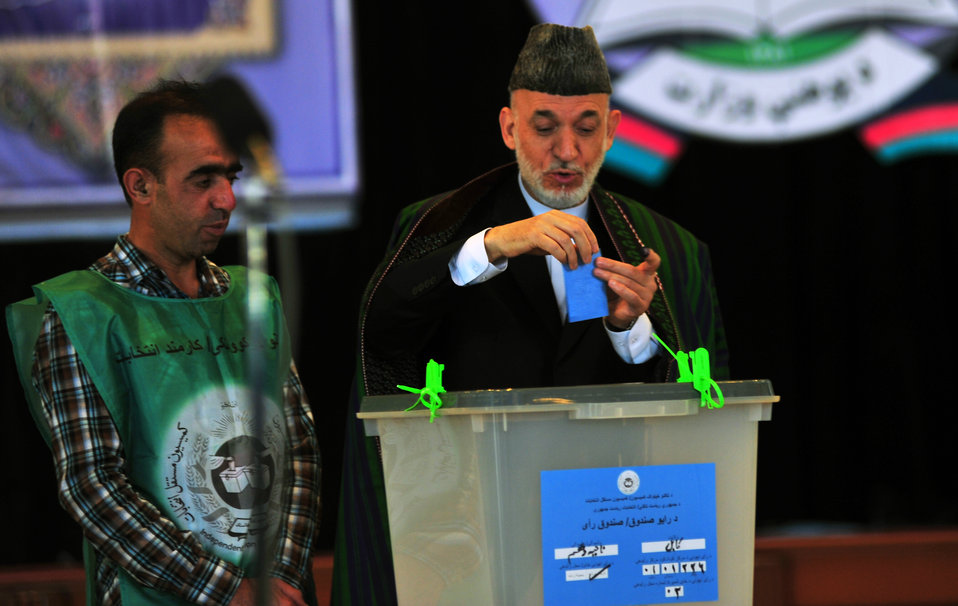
President Hamid Karzai, casts his vote in Kabul.